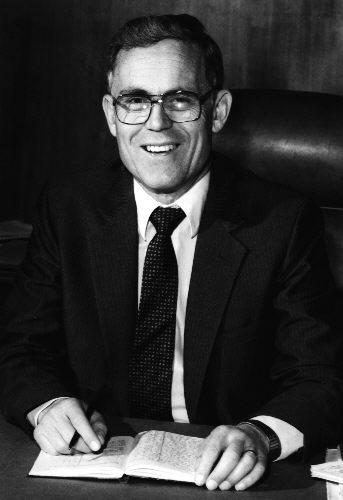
James O. Mason, M.D., Dr.P.H., Director, CDC